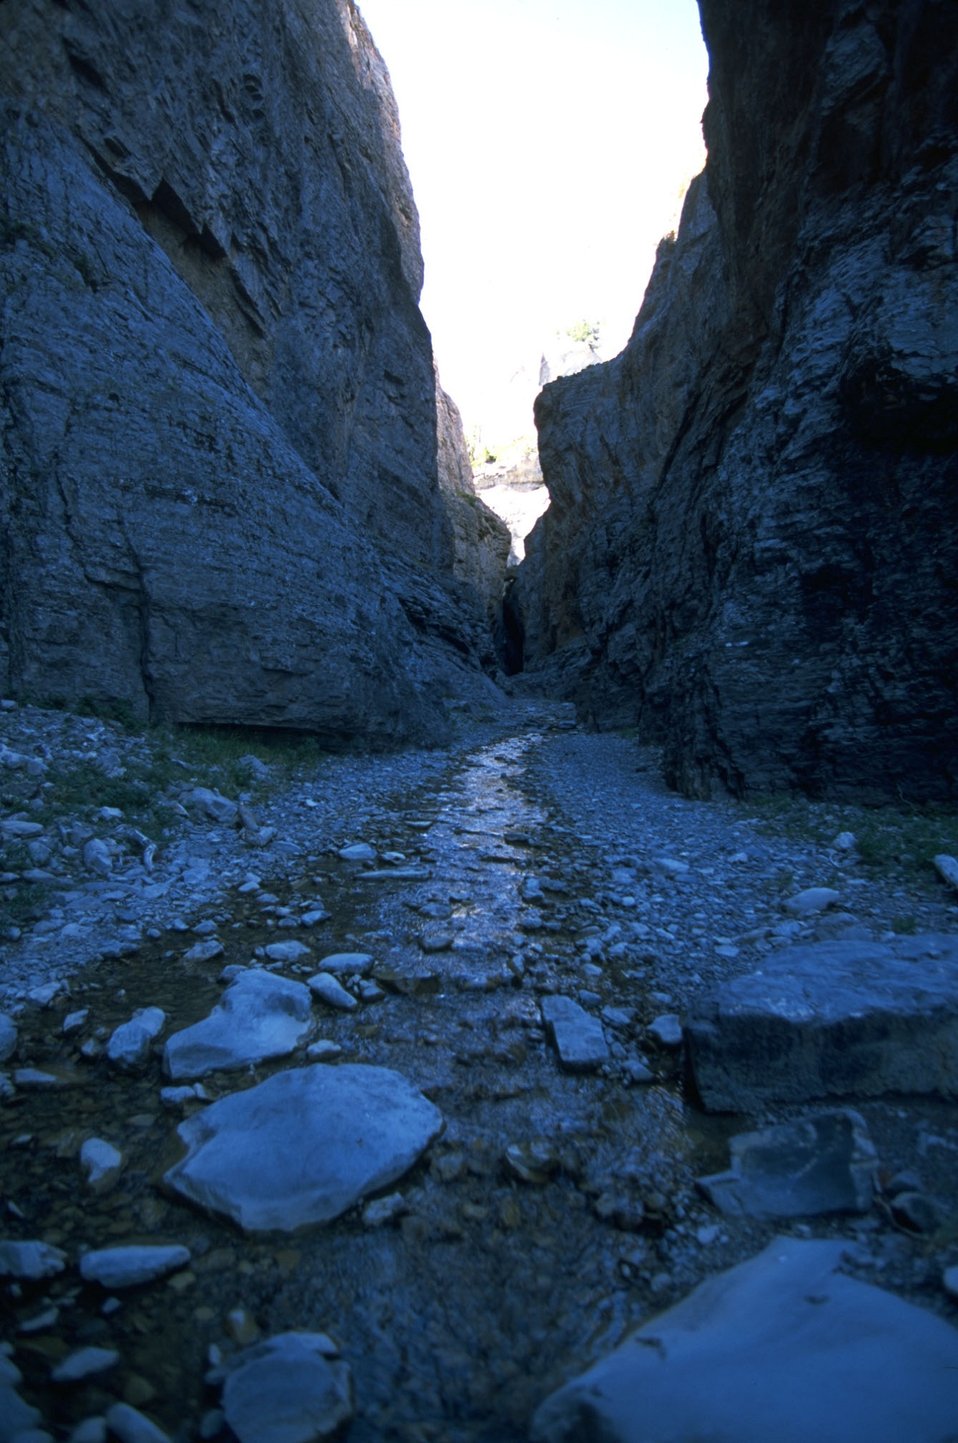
Looking west at Muddy Creek in the Rocky Mountain Front